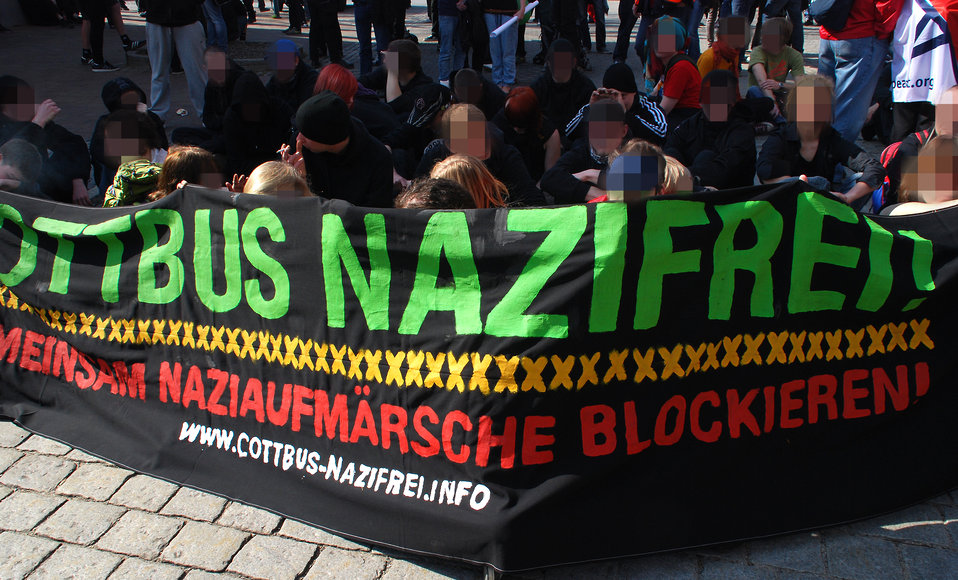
Proteste gegen den Nazi-Aufmarsch am 24.3.2012 in Frankfurt (Oder)